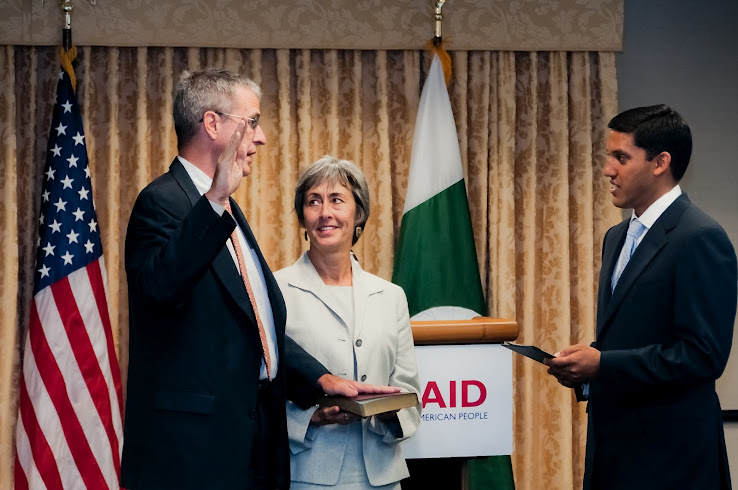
Jonathan Conly

WASHINGTON, D.C. – This week, Jonathan Conly was sworn in as the new U.S. Agency for International Development (USAID) Country Director for Pakistan. USAID Administrator Dr. Rajiv Shah presided over the ceremony and administered the oath in the presence of Mr. Conly’s family, friends, and colleagues, as well as members of the Pakistani-American community and the Pakistan Embassy’s Deputy Chief of Mission, Dr. Asad Majeed Khan.